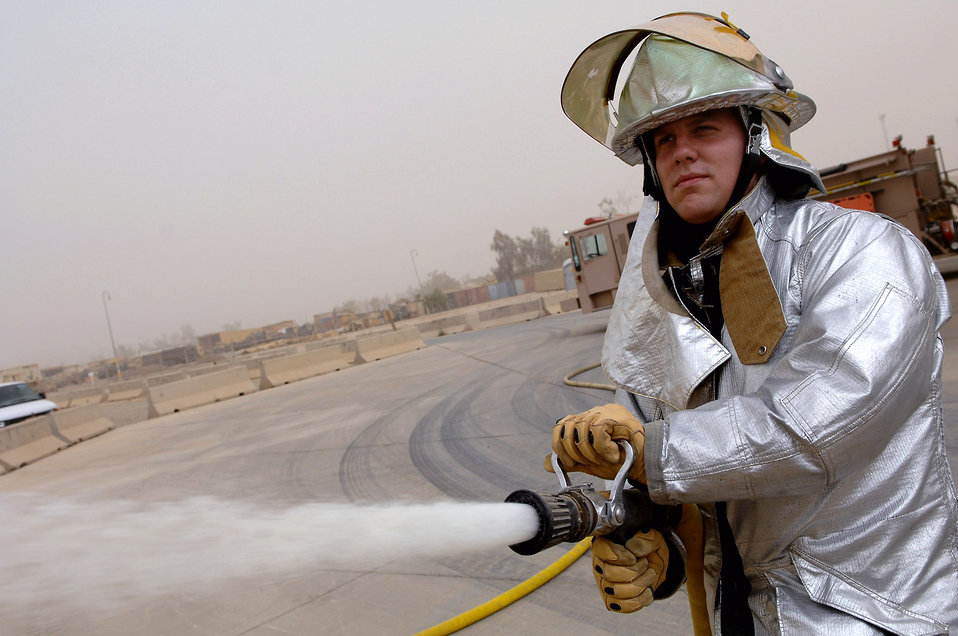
Firefighting is a joint venture

Airman 1st Class Adam Baumgardner conducts hose advancement and pump training April 29 at Balad Air Base, Iraq. The fire station on Balad AB is composed of both Army and Air Force members who work jointly to respond to fires and emergency situations. This allows for seamless coordination of their efforts when responding to emergencies. Airman Baumgardner is a 332nd Expeditionary Civil Engineer Squadron firefighter deployed from Malmstrom Air Force Base, Mont.